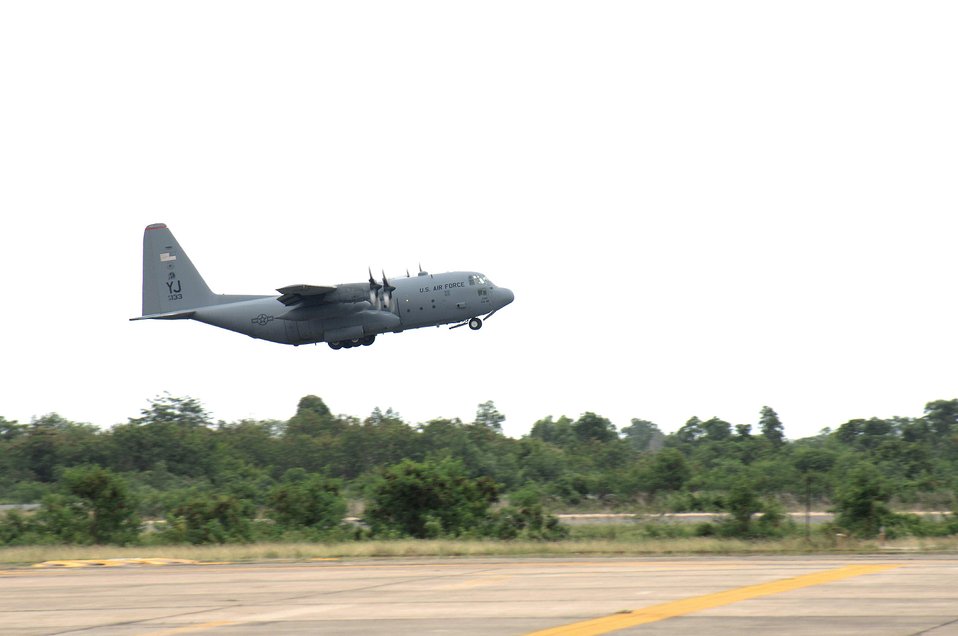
Airmen support Burma relief effort

A C-130 Hercules flown in from Yokota Air Base, Japan, departs for the first flight to Burma to provide humanitarian relief to the victims of Cyclone Nargis May 12 from Utapao International Airport, Thailand.